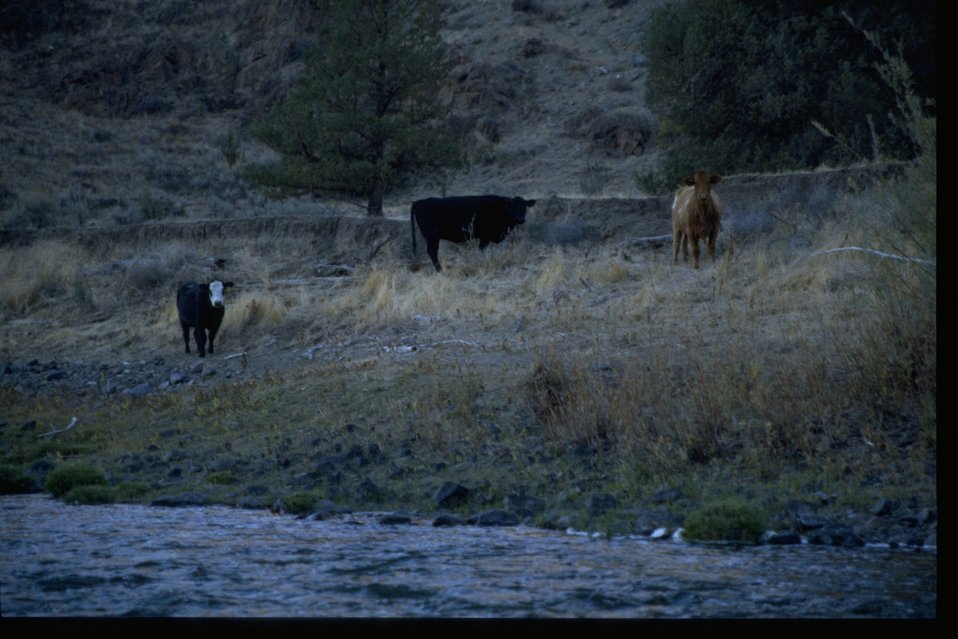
Cows along the John Day River.